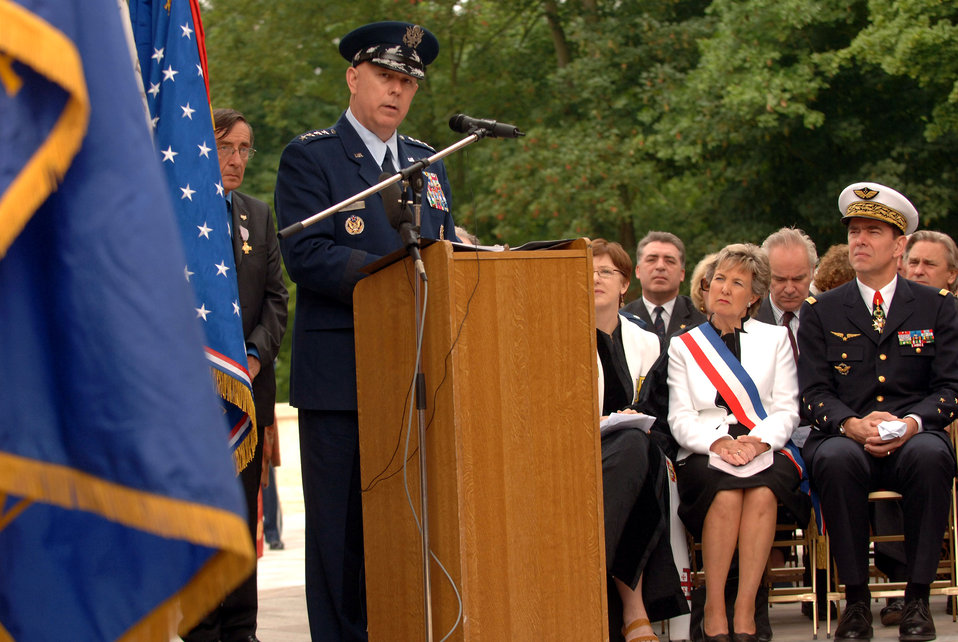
Early aviators memorialized

Air Force Chief of Staff Gen, T. Michael Moseley speaks during a ceremony at the Lafayette Memorial outside Paris. French and Americans gathered to pay homage to the United States' first combat aviators who comprised the Lafayette Escadrille. The all-American squadron of volunteers flew under the French flag during World War I where many gave their lives in defense of French democracy. Also speaking during the ceremony were Christiane Barody-Weiss, mayor of nearby Marnes-la-Coquette, and General Moseley's French air force counterpart, Gen. Stephane Abrial.